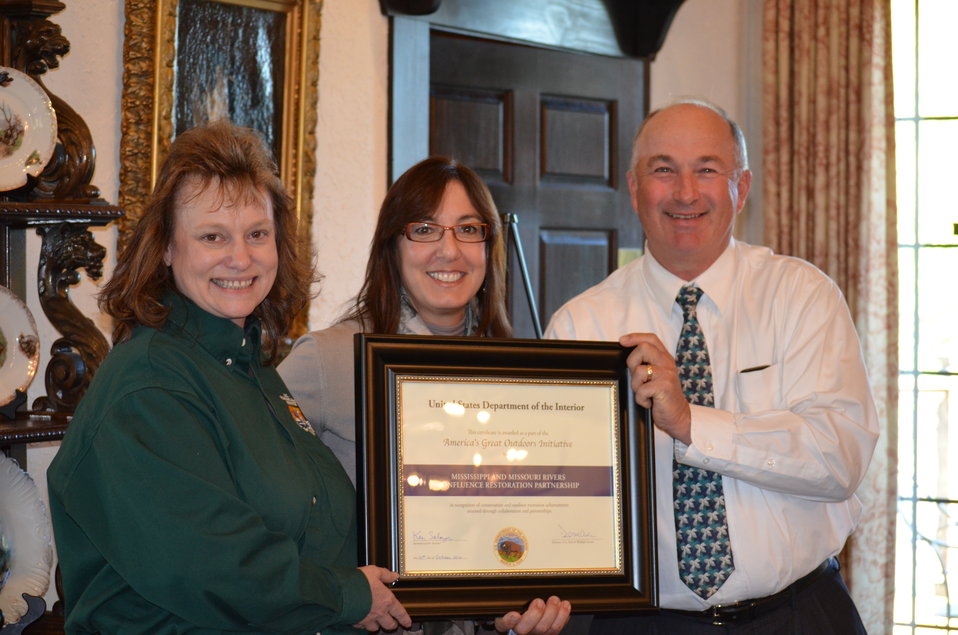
Honoring Conservation Federation of Missouri

Award presented to Dave Murphy, Executive Director of Conservation Federation of Missouri for his role in confluence conservation. USFWS/Ashley Spratt